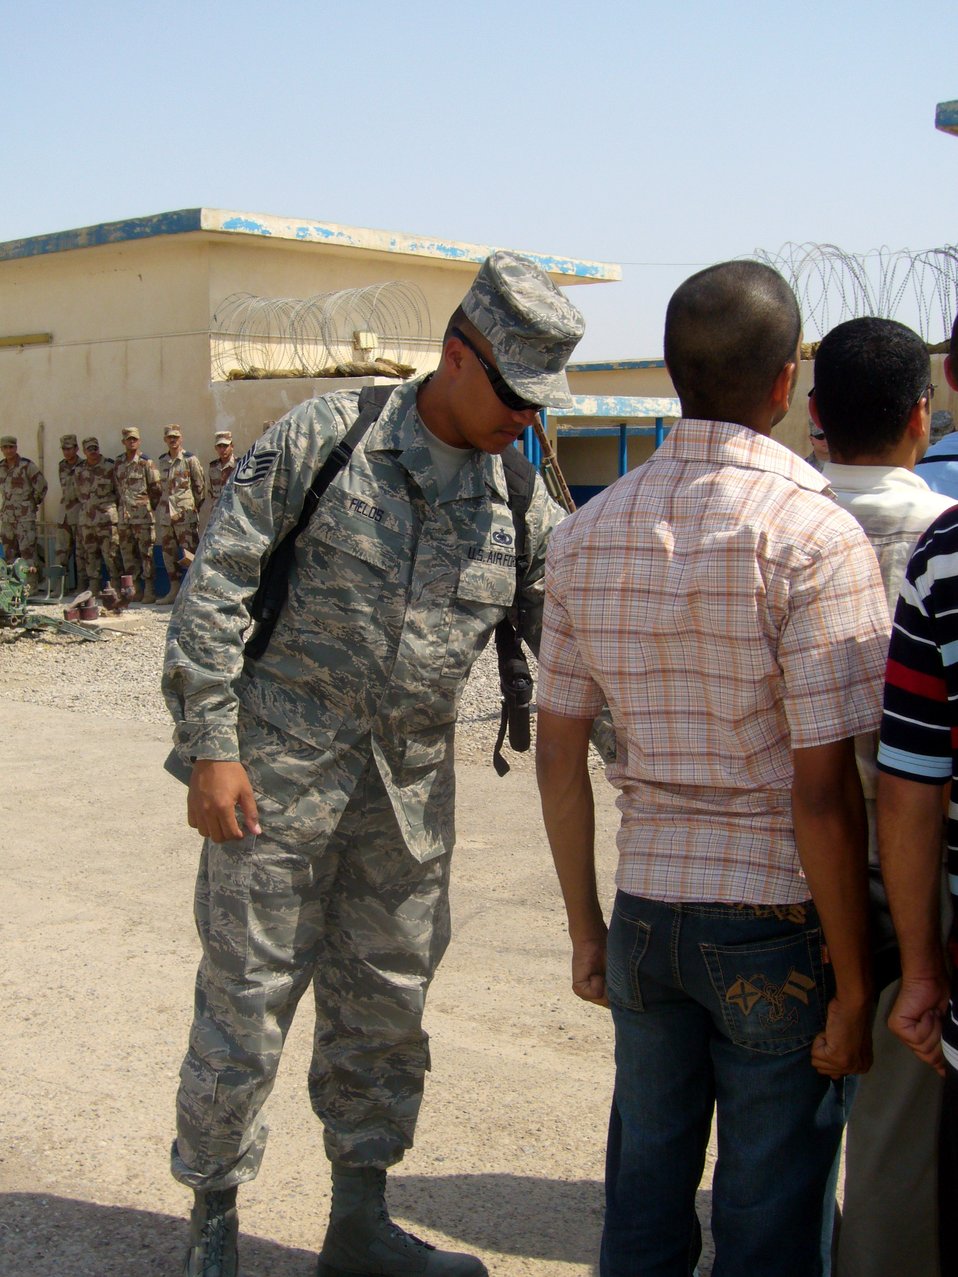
Iraqi air force makes strides toward transition

Staff Sgt. Benny Fields shows a member in the second class of Iraqi Officer Candidates how to position his hands in the position of attention while the first class of cadets look Aug. 28 at Camp Taji, Iraq. The 10 cadets will be the first to graduate from the Air Force Training Academy Sept. 12 at Taji Air Force Base, Iraq. Sergeant Fields is a member of the Coalition Air Force Transition Team, and is deployed from the 737th Training Group at Lackland Air Force Base, Texas.